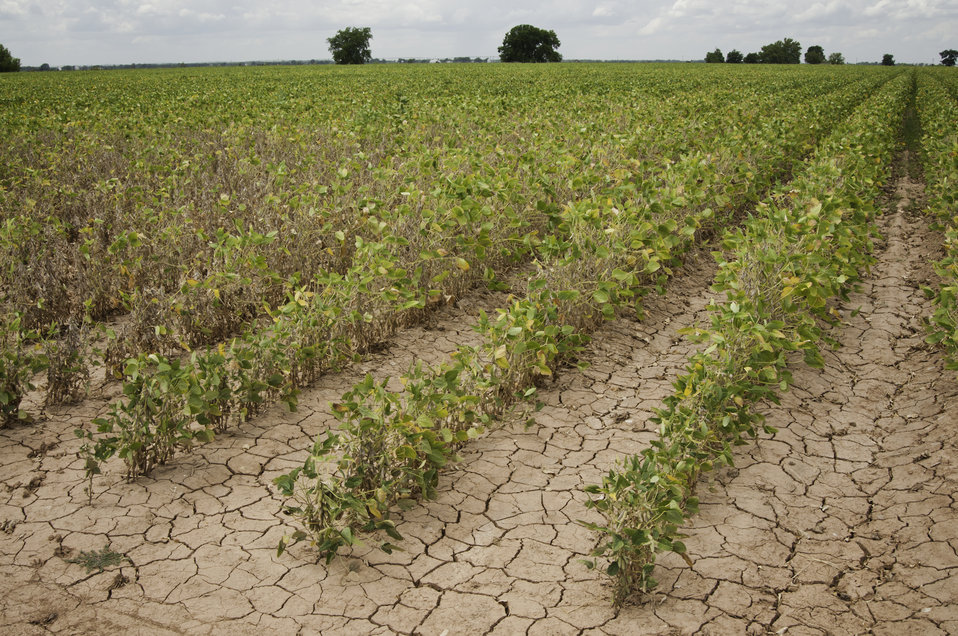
Soybeans show the effect of the drought near Navasota, TX on Aug. 23, 2013.